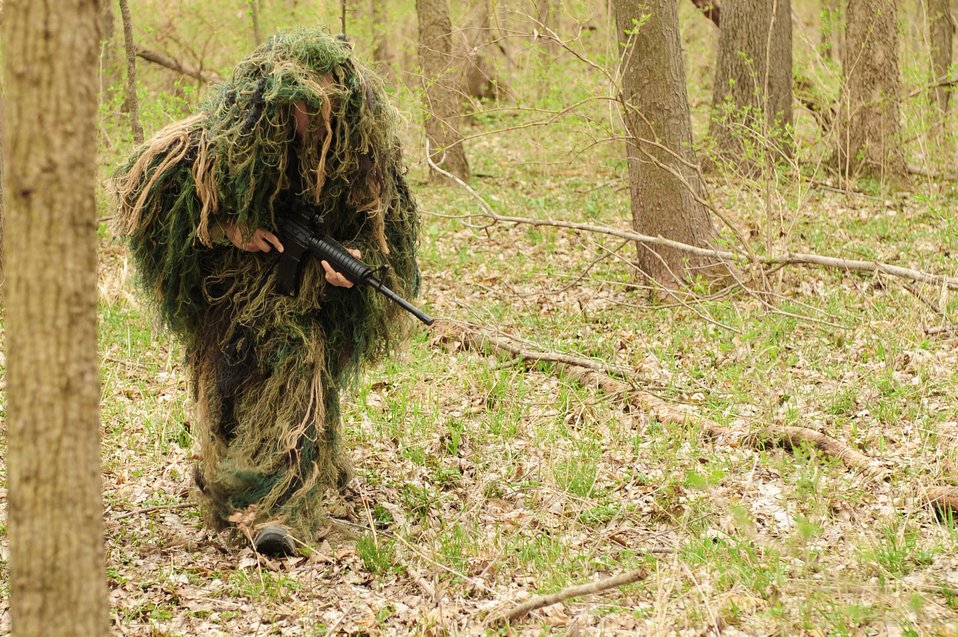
Combat survival training

Tech. Sgt. Robert Graham participates in combat survival training March 22, 2011, at the Illinois Army National Guard's Sparta Training Area in Sparta, Ill. Sergeant Graham is a survival, evasion, resistance and escape specialist assigned to the 375th Operations Support Squadron at Scott Air Force Base, Ill.